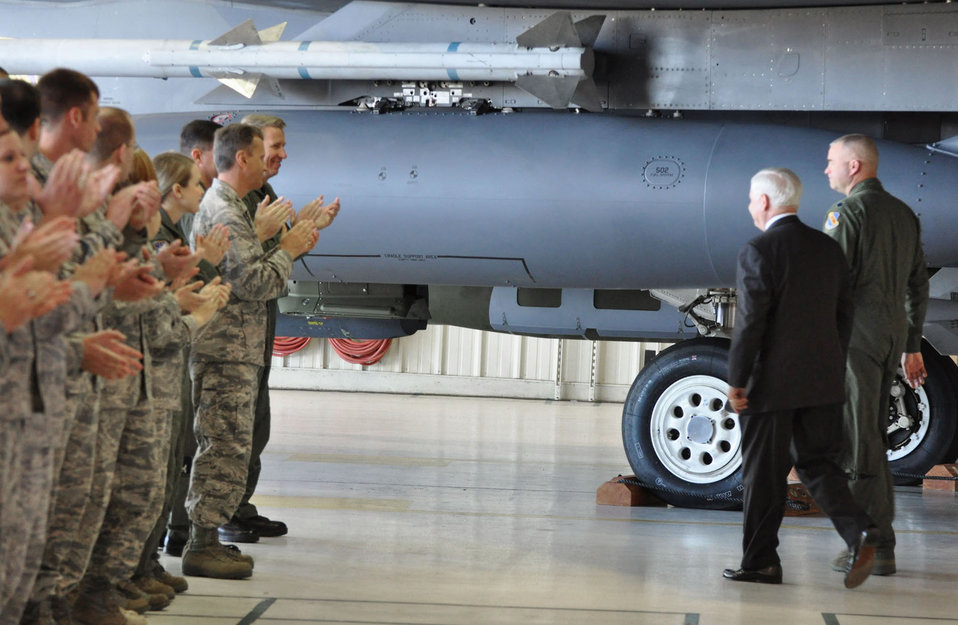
Secretary of Defense thanks Airmen at Seymour Johnson AFB

Secretary of Defense Robert Gates walks by Col. Patrick Doherty and Col. Randy Ogden May 6, 2011, after making remarks to nearly 300 Airmen at Seymour Johnson Air Force Base, N.C. Colonel Doherty is the 4th Flying Wing commander, and Colonel Ogden is the 916th Air Refueling Wing commander.